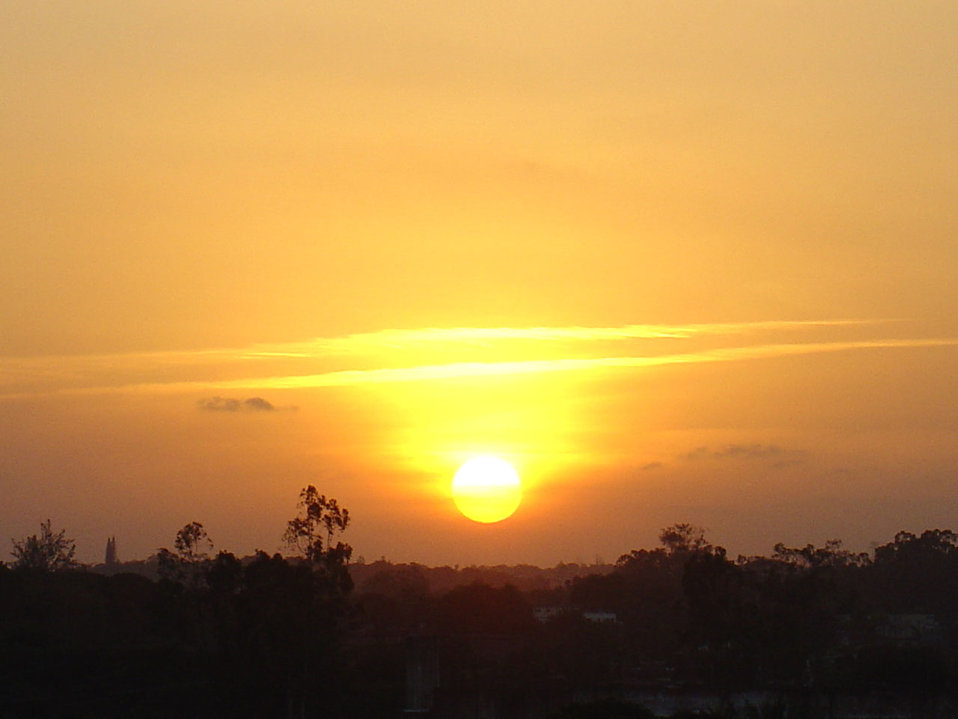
Sunset

Perfect evening.